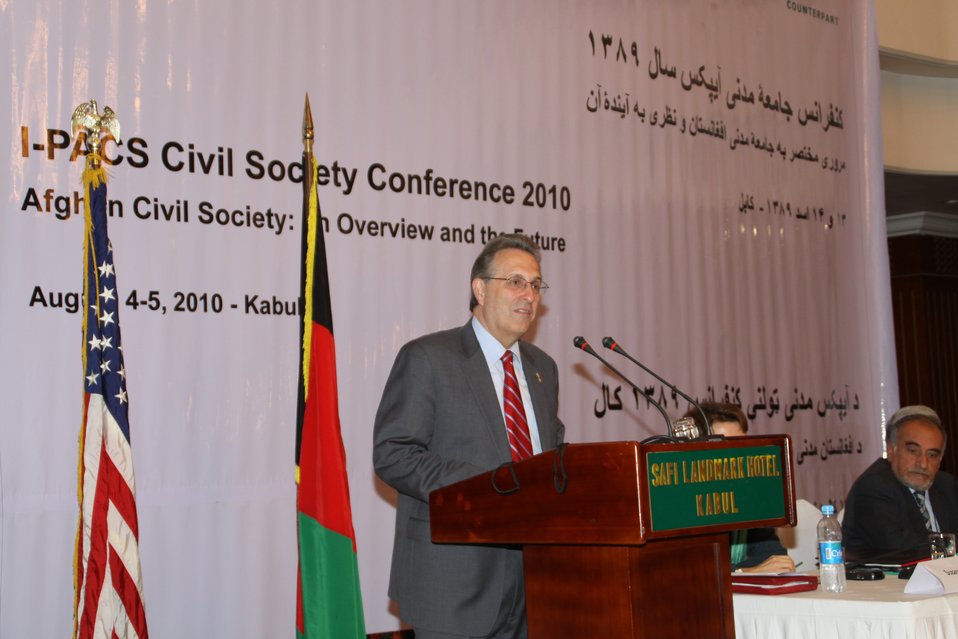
Civil Society Conference Held in Kabul